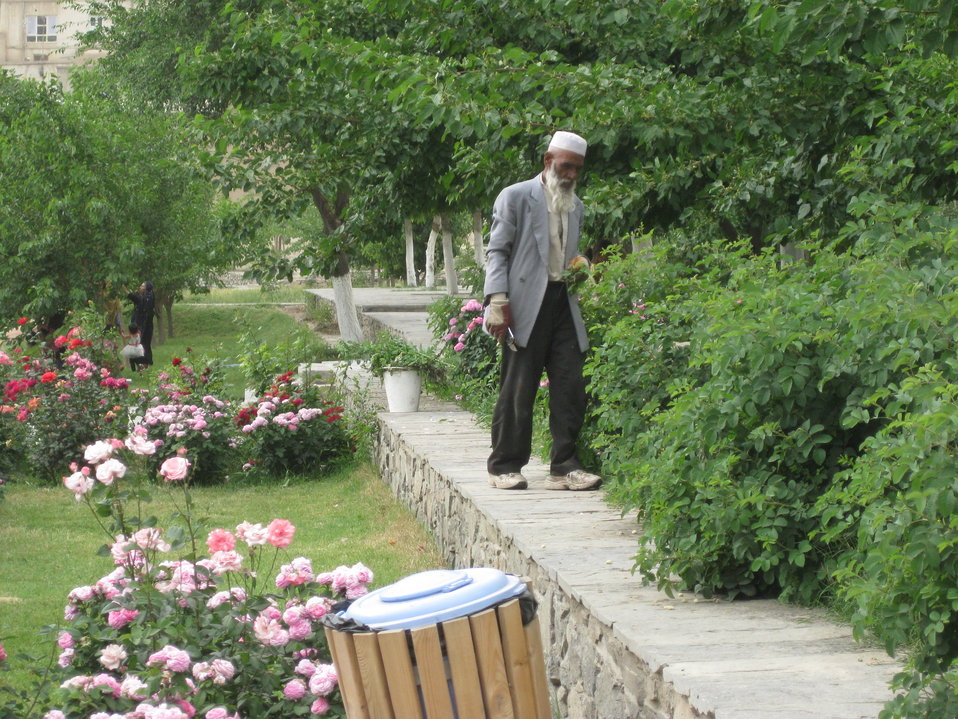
Afghan Youth Voices 092